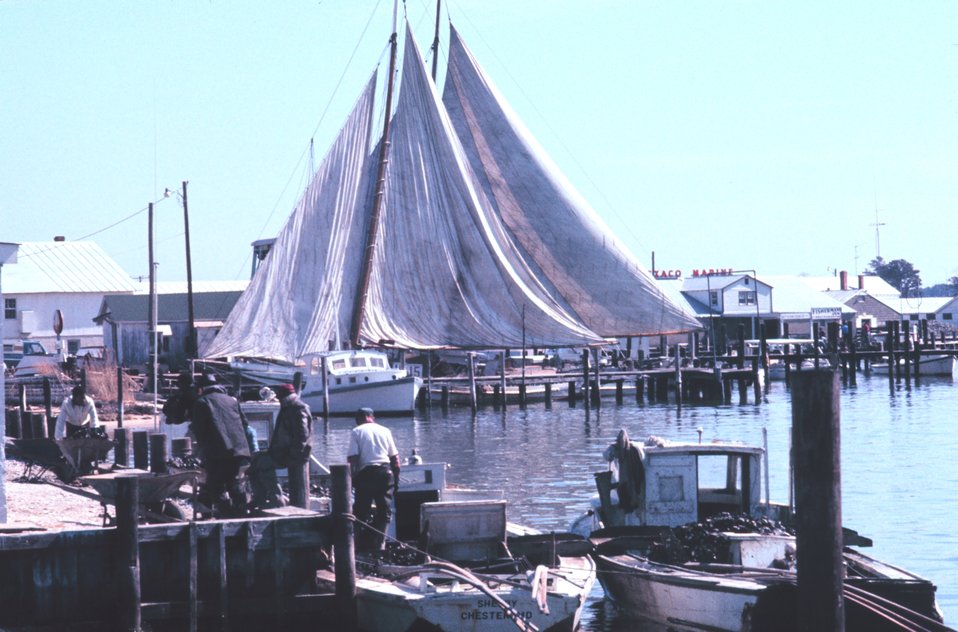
Sailing oyster dredgers drying their sails alongside the dock.